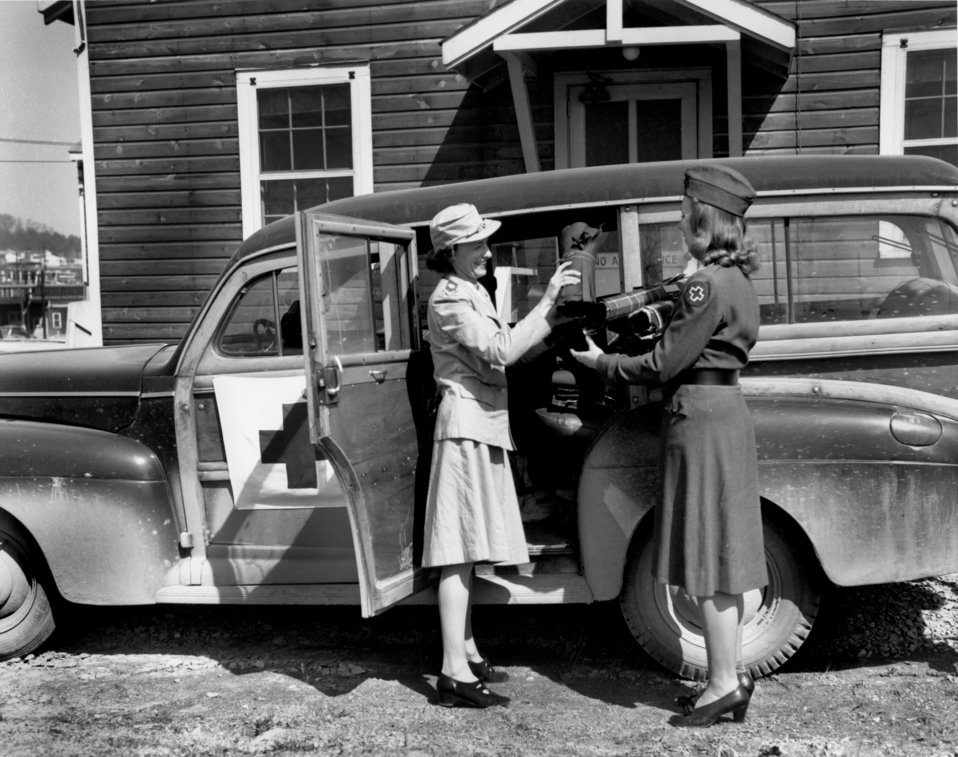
Red Cross Motor Corps. 1945 Oak Ridge

pro344-4 DOE photo Ed Westcott 3-7-1945 Mrs. Russell and Mrs. E. L. Hill Oak Ridge Tennessee